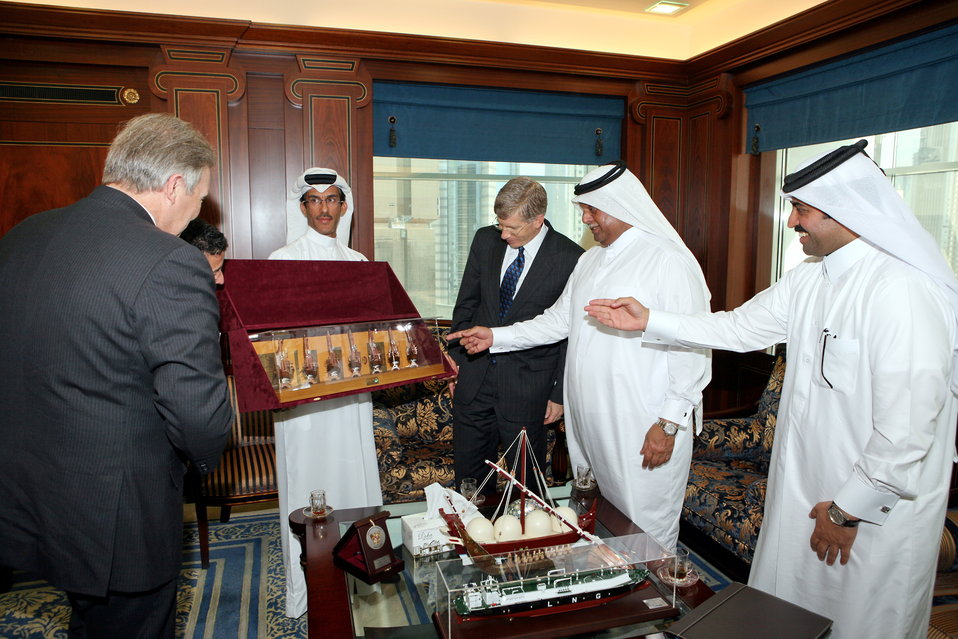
Deputy Secretary Poneman meets with Qatar Deputy Prime Minister and Minister of Energy and Industry Abdulla bin Hamad al-Attiyah.